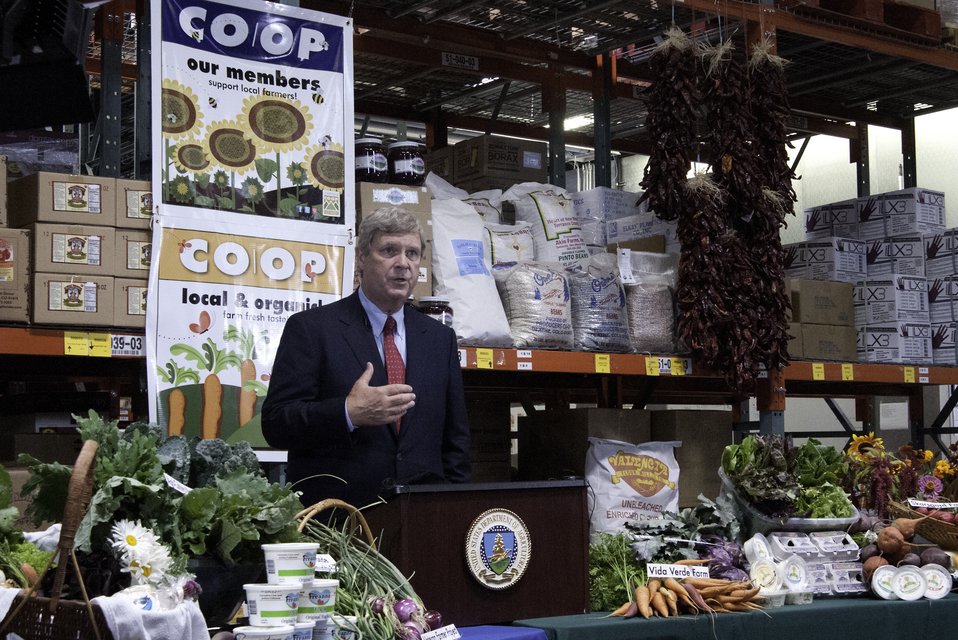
Agriculture Secretary Tom Vilsack meets with New Mexico producers and community stakeholders to highlight the U.S. Department of Agriculture’s (USDA) StrikeForce Initiative opportunities and the importance of comprehensive immigration reform in Albuquerque, NM on Thursday, Jun. 20, 2013.